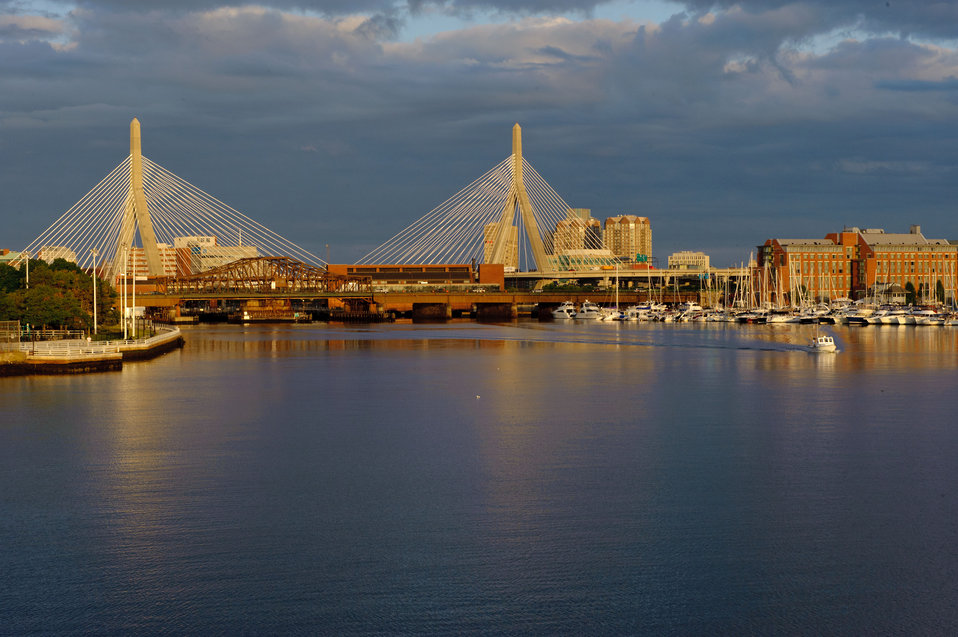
August 4, 2011 beautiful Boston vista